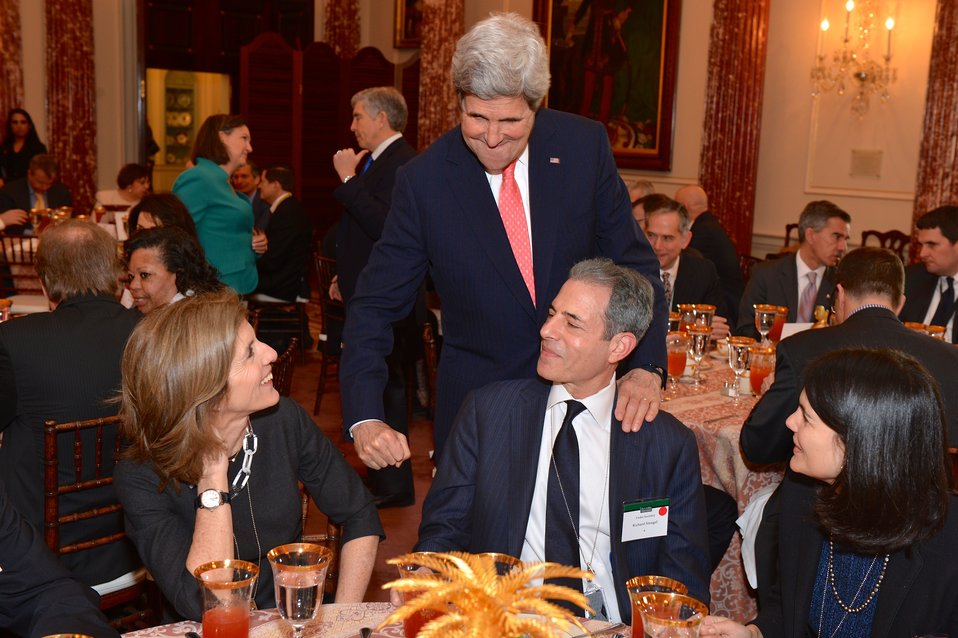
Secretary Kerry Chats With Ambassador Kennedy and Under Secretary Stengel

During a lunch discussion at the Global Chiefs of Mission Conference, U.S. Secretary of State John Kerry chats with U.S. Ambassador to Japan Caroline Kennedy and Under Secretary for Public Diplomacy and Public Affairs Rick Stengel at the U.S. Department of State in Washington, D.C., on March 11, 2014.